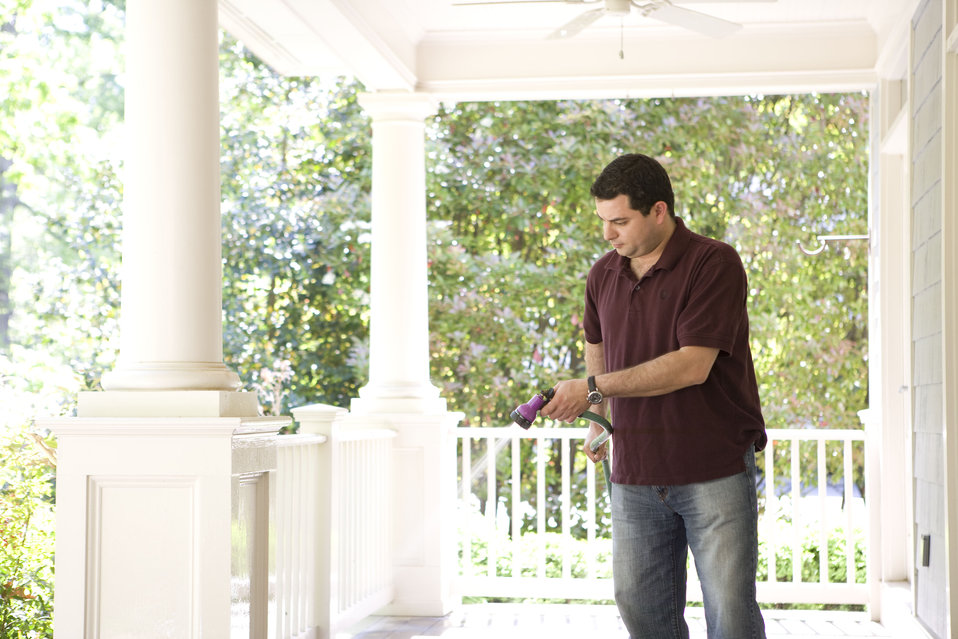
Home maintenance includes both the indoor, and as was the case here, outdoor environment, and is an ongoing process with which a homeowner need to keep up in order to provide for a healthy living space. Keeping your porch dust-free reduces the amount of contaminants tracked into the house.This man was in the process of cleaning his home's porch using a broom, as well as a water hose. In this way, airborne particulates including dust and pollen, could be removed from this area of his home, reducing the detrimental effects upon his family's respiratory systems. These irritants can sometimes result in sinus infections, and asthma.